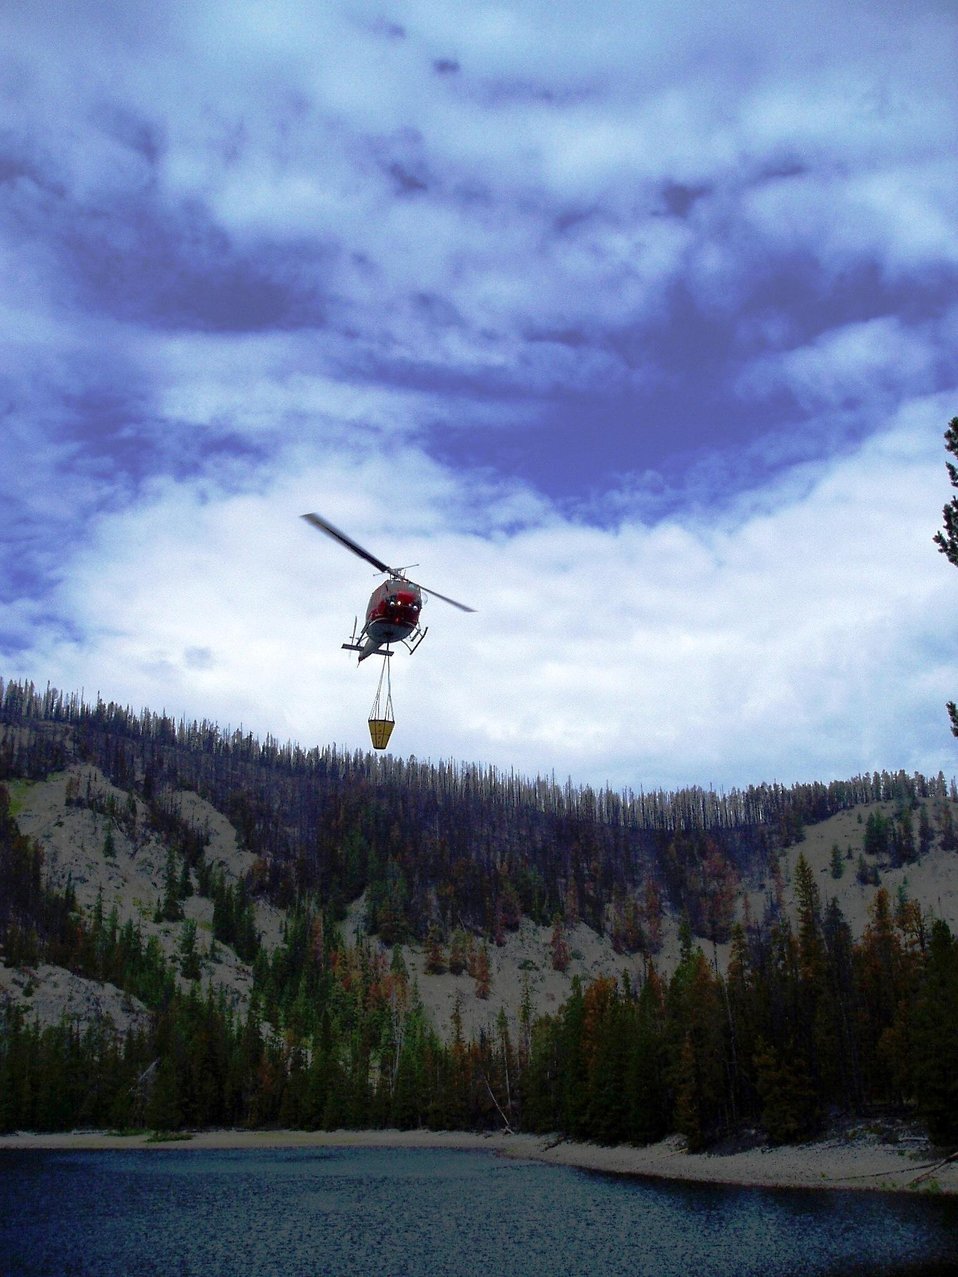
A helicopter fills its bucket at Whetstone Lake to use against the Moose Meadow Fire. The Moose Meadow Fire in the Beaverhead-Deerlodge National Forest near Philipsbug, MT began on Jul. 25, 2013 by lightning has consumed approximately 3,400 acres and is approximately 30% contained.